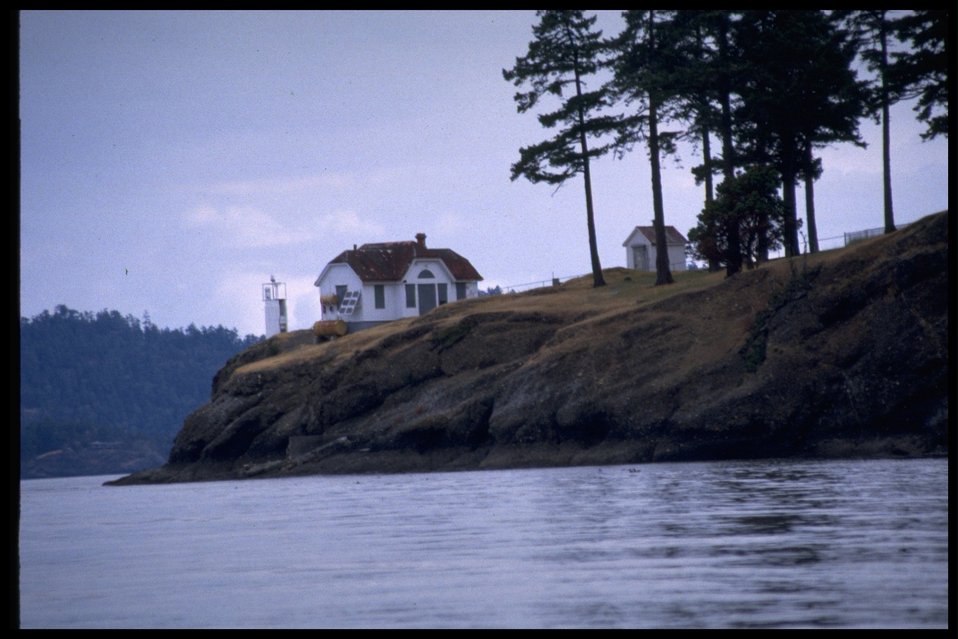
Turn Point from water with light station and buildings. Series of 17 photos.